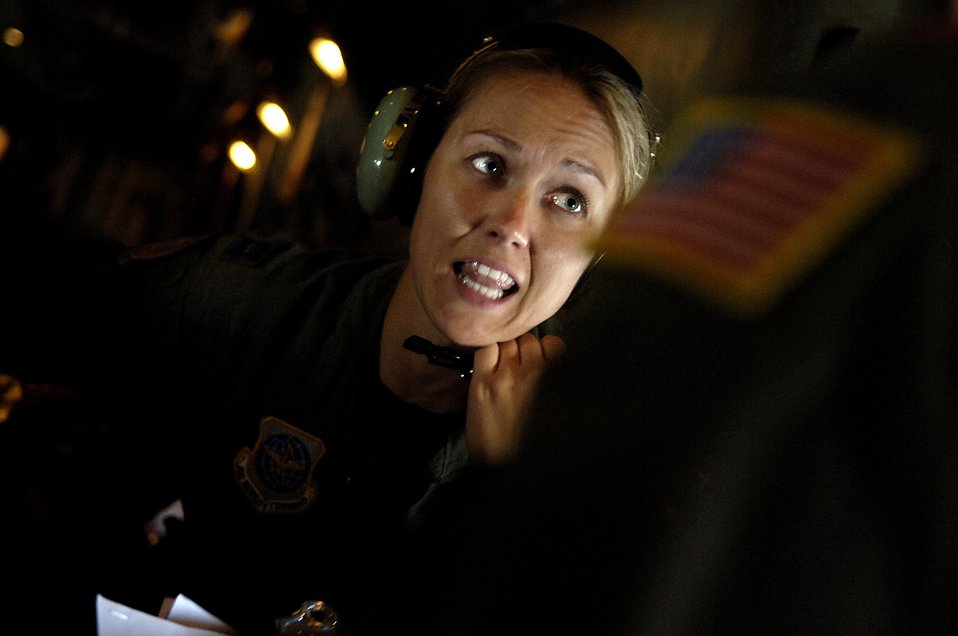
Rodeo competition

Capt. Lisa Palmer and her team receive a medical scenario from a Rodeo umpire aboard a C-130 Hercules during an aeromedical evacuation competition July 23 for Air Mobility Command's Rodeo 2007 held at McChord Air Force Base, Wash.